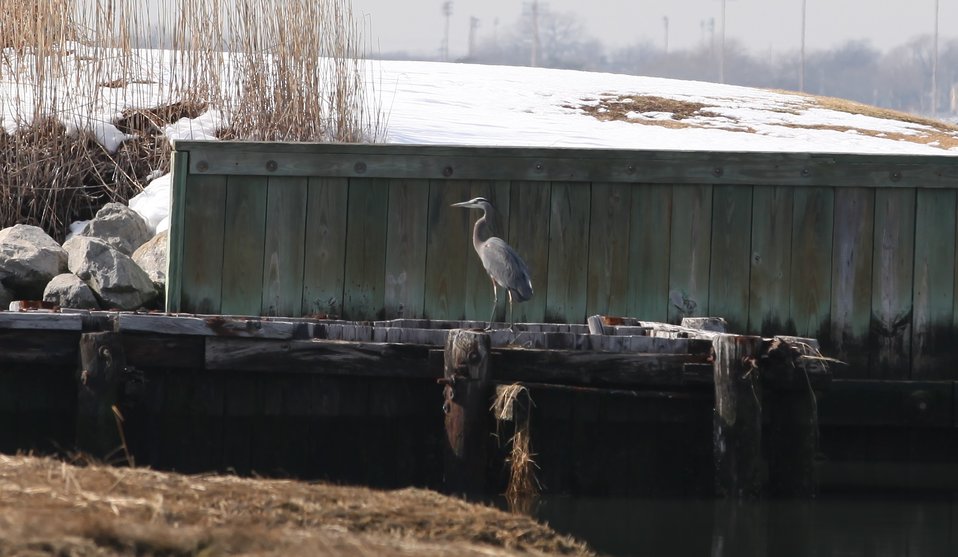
Great Blue Heron

Location: Lido Beach WMA, Long Island National Wildlife Refuge Complex.